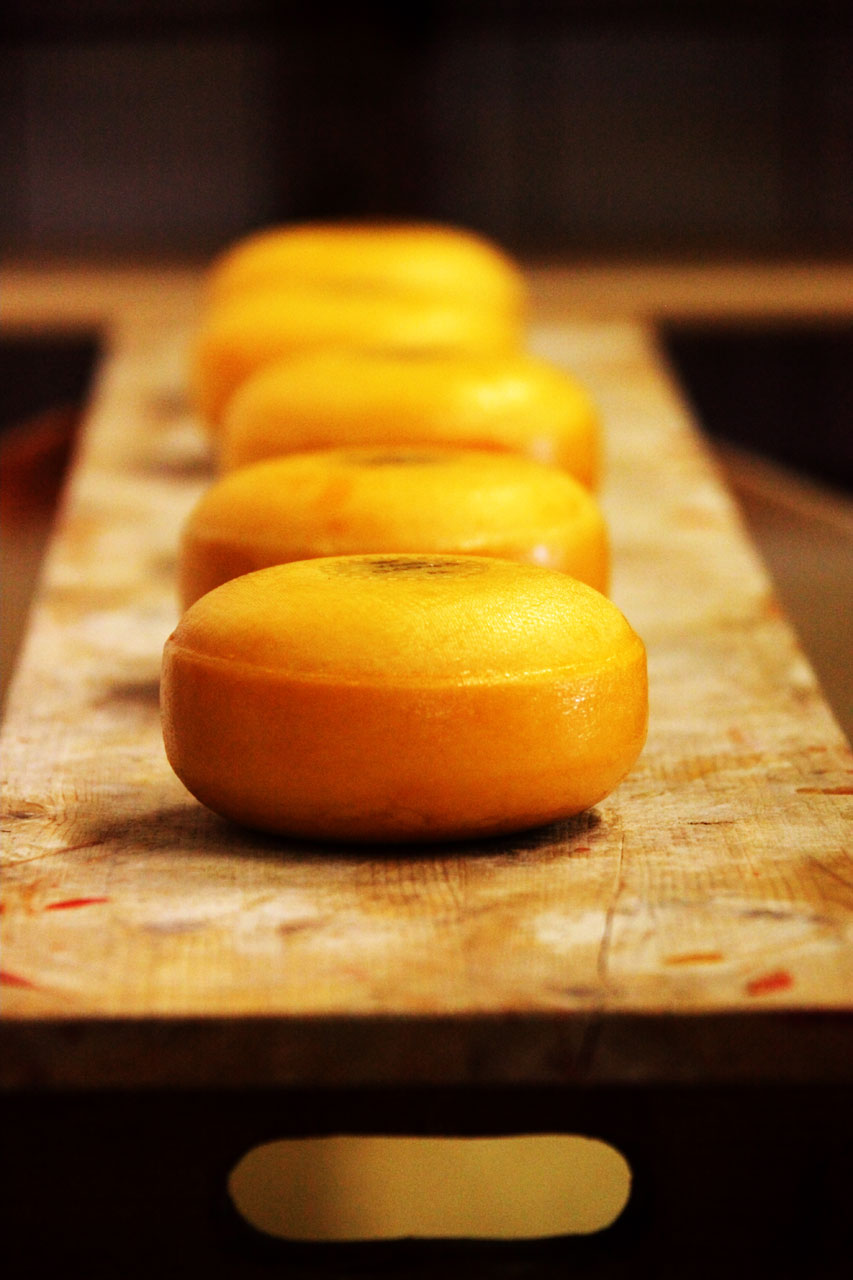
Cheese wheels on bench.